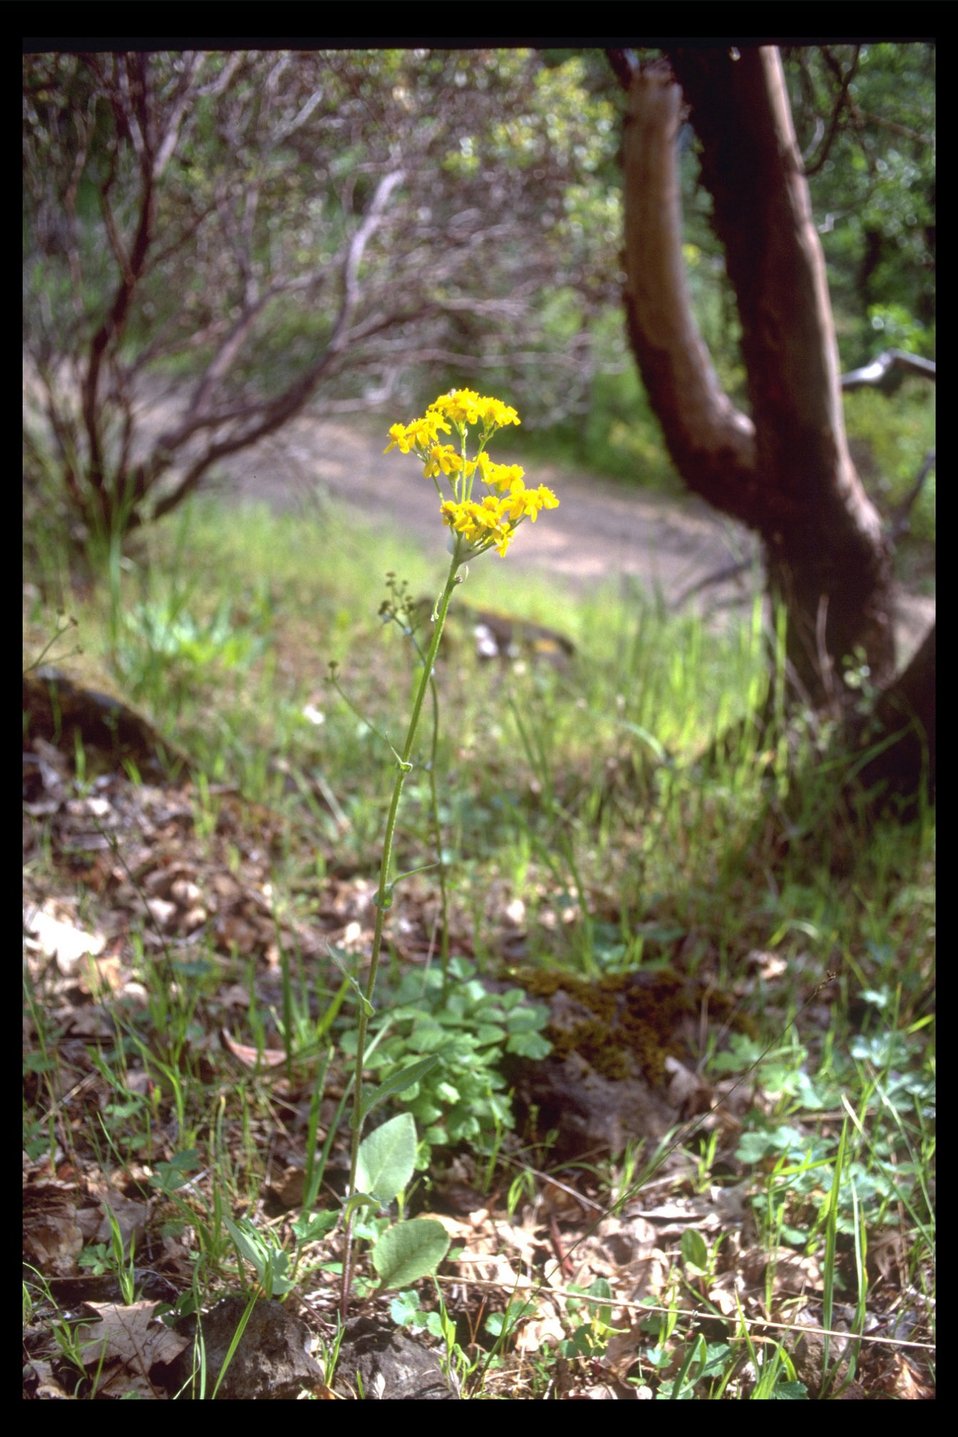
The Tall Butterweed (Senecio integerrimus) at Shady Cove.